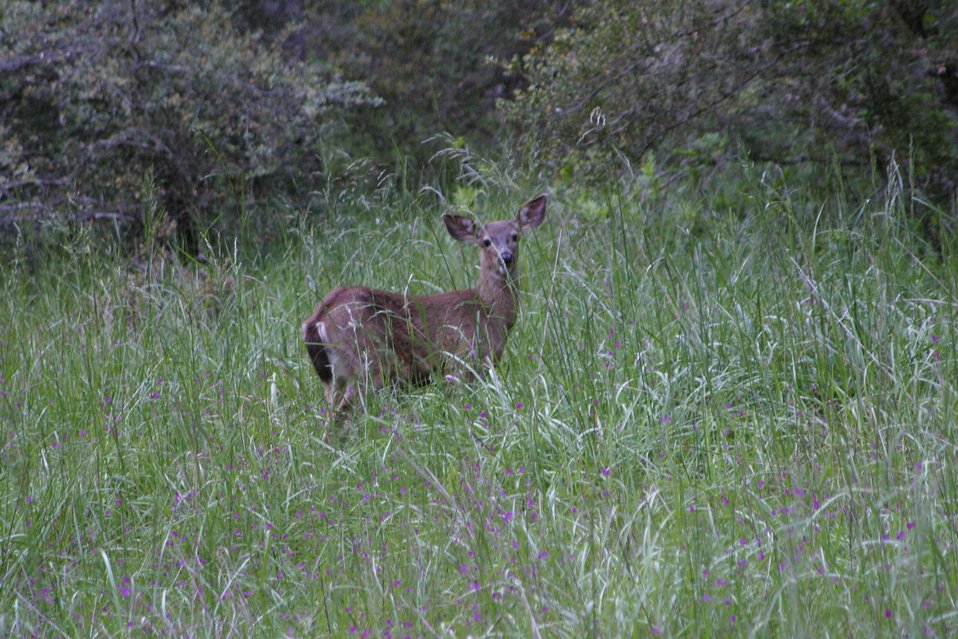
Wild section of the Rogue River from Grave Creek to Foster Bar May 19 to May 22.